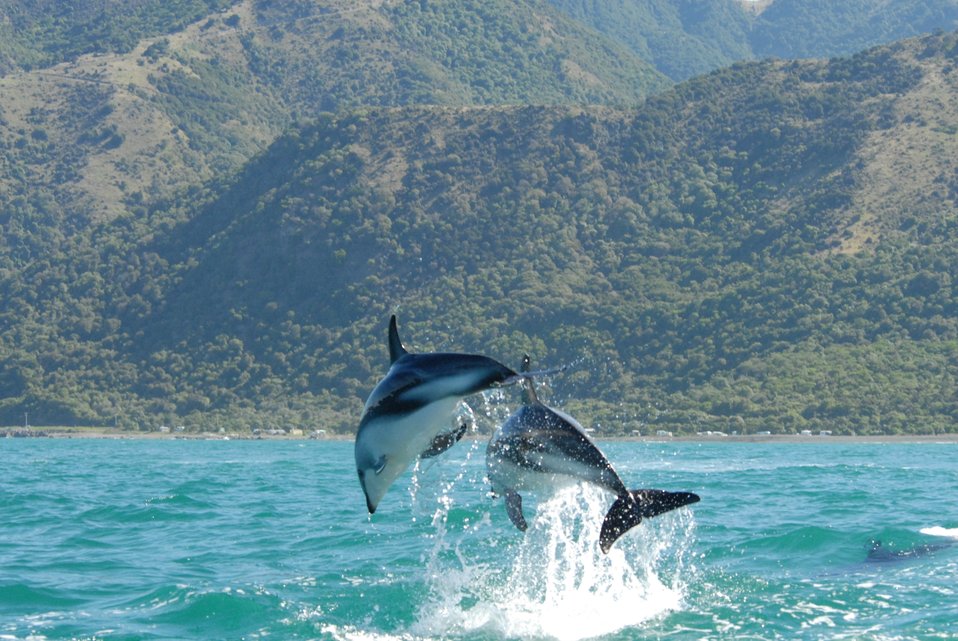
Dusky dolphin (Lagenorhynchus obscurus)